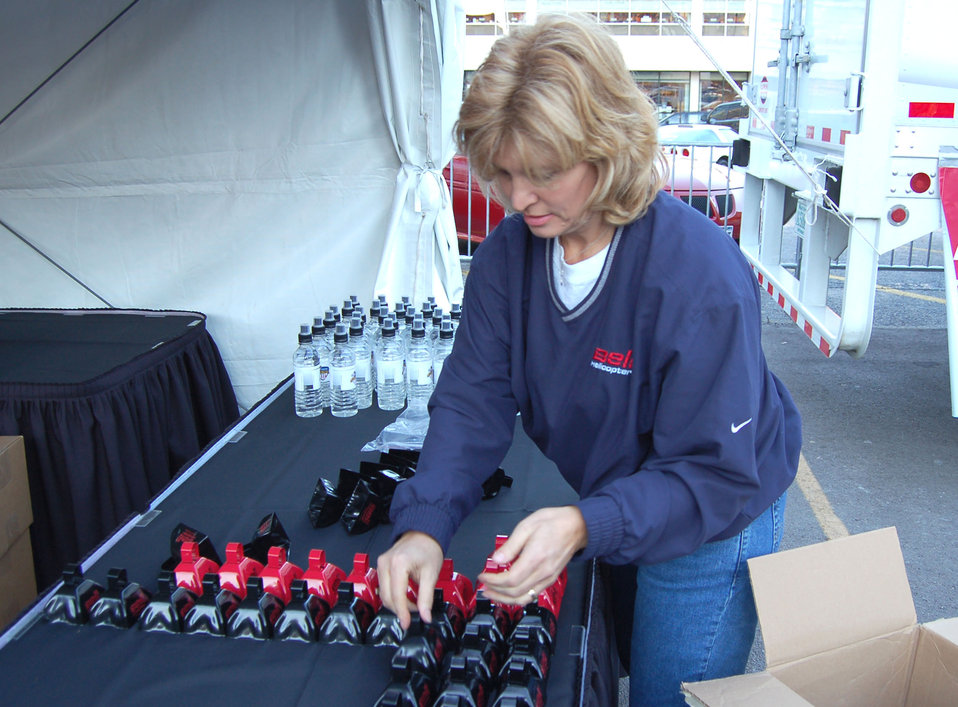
Pep rally heightens excitement for Bell Helicopter Armed Forces Bowl

Judy McBride arranges giveaways at the Bell Helicopter booth at a pep rally Dec. 22 at Sundance Square in Fort Worth, Texas. The Bell Helicopter Armed Forces Bowl kicks off at 7 p.m. Dec. 23 at the Amon G. Carter Stadium in Fort Worth. McBride is an employee of Bell Helicopter.